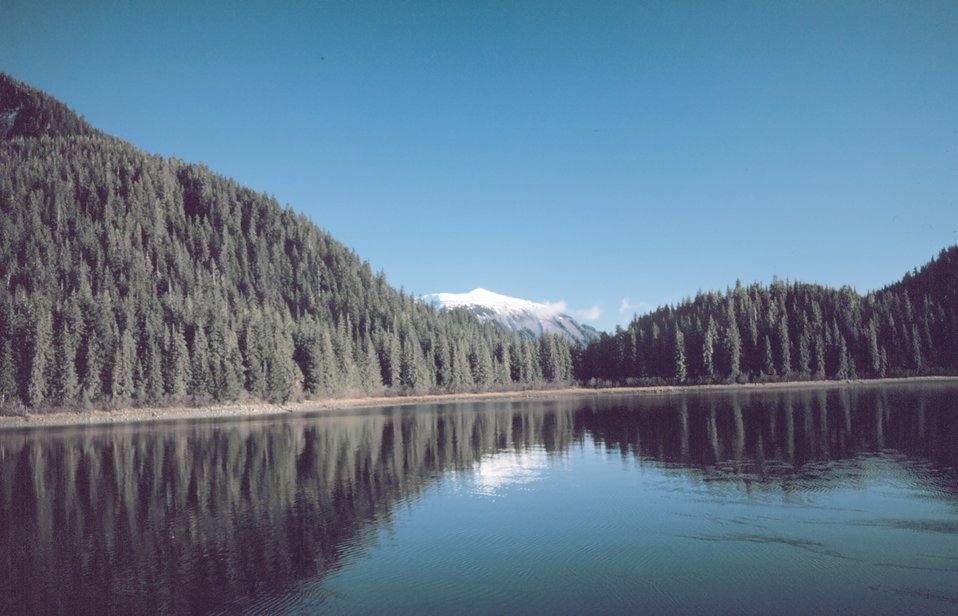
View to the north looking at The Portage at the headwaters of Tenakee Inlet.